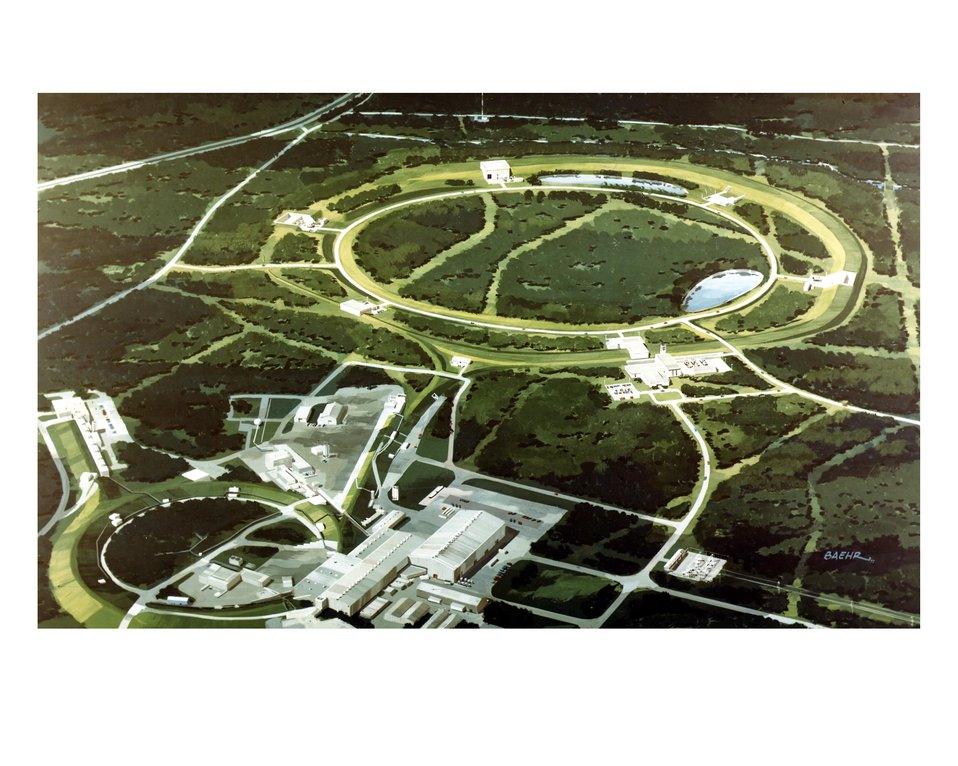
CBA IS A PROTON-PROTON COLLIDING BEAM ACCELERATOR WHICH IS BEING BUILT TO STUDY THE BASIC STRUCTURE OF ENERGY AND MATTER. THE FACILITY ITSELF IS AN UNDERGROUND CIRCULAR TUNNEL, WHICH IS 3.8 KILOMETERS IN CIRCUMFERENCE. TWO RINGS OF SUPERCONDUCTING MAGNETS WILL BE INSIDE THE TUNNEL. PRO- TON BEAMS WILL BE INJECTED INTO THE TUNNEL AND ACCELERATED TO ENERGIES UP TO 400 GEV. AT SIX PLACES ALONG THE TUNNEL, THE BEAMS WILL COLLIDE. EXPERIMENTAL HALLS, WHICH ENCLOSE THESE 6 INTERSECTIONS, WILL HOUSE EQUIPMENT FOR STUDYING THE RESULTS OF THE COLLISIONS.